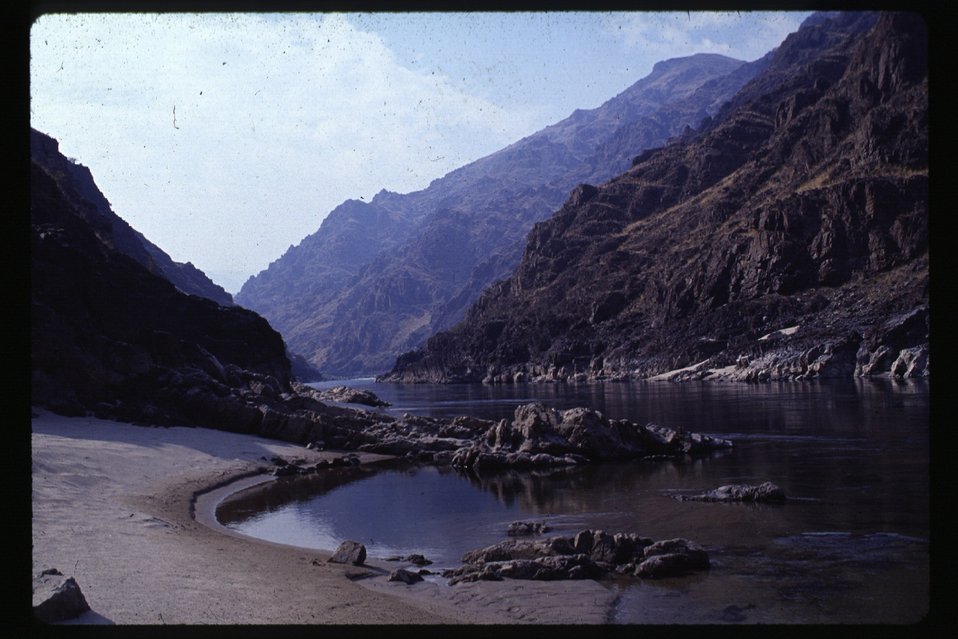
Scenic Lower Salmon River Cottonwood Field Office UCSC Upper Columbia Salmon Clearwater District